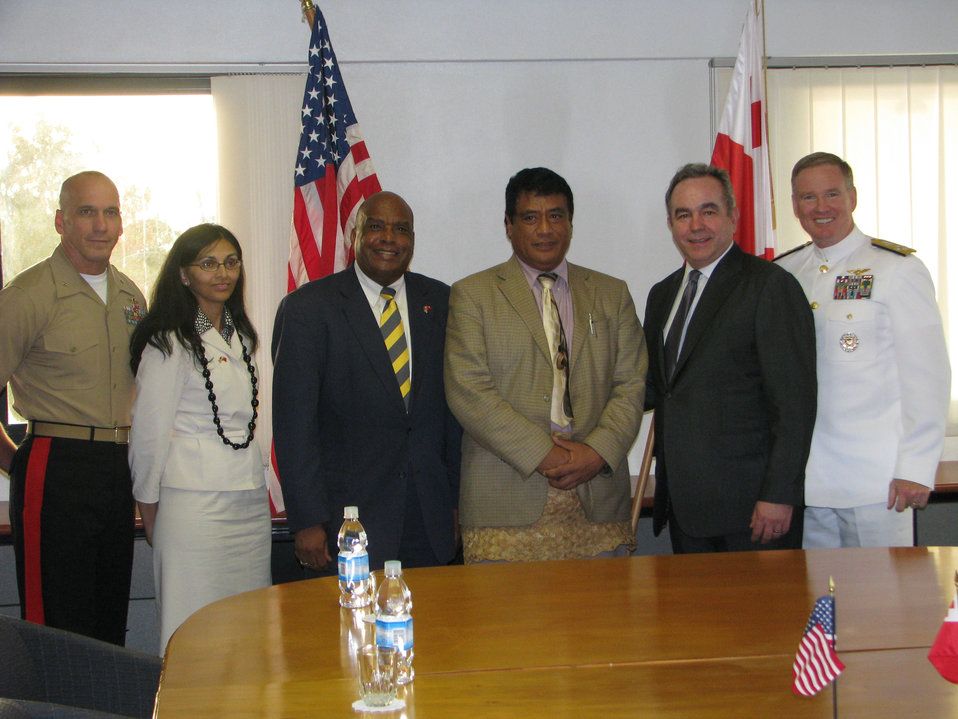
Assistant Secretary Campbell and the U.S. Delegation Pose for a Photo With Tonga’s Prime Minister Lord Tui’vakano

Assistant Secretary of State for East Asian and Pacific Affairs Kurt Campbell, second from right, and a U.S. delegation he is leading, pose for a photo with Tonga's Prime Minister, Lord Tui'vakano, center right, in Nuku'alofa, Tonga, on June 28, 2011. The delegation, which was joined by U.S. Ambassador to Tonga C. Steven McGann, left center, is visiting nations throughout the South Pacific to enhance bilateral political, economic, and security relations in the region. The delegation includes Adm. Patrick Walsh, commander of U.S. Pacific Fleet, rightl; U.S. Agency for International Development (USAID) Assistant Administrator Nisha Biswal, second from left; and Office of the Secretary of Defense South/Southeast Asia Principal Director, Marine Corps Brig. Gen. Richard Simcock.